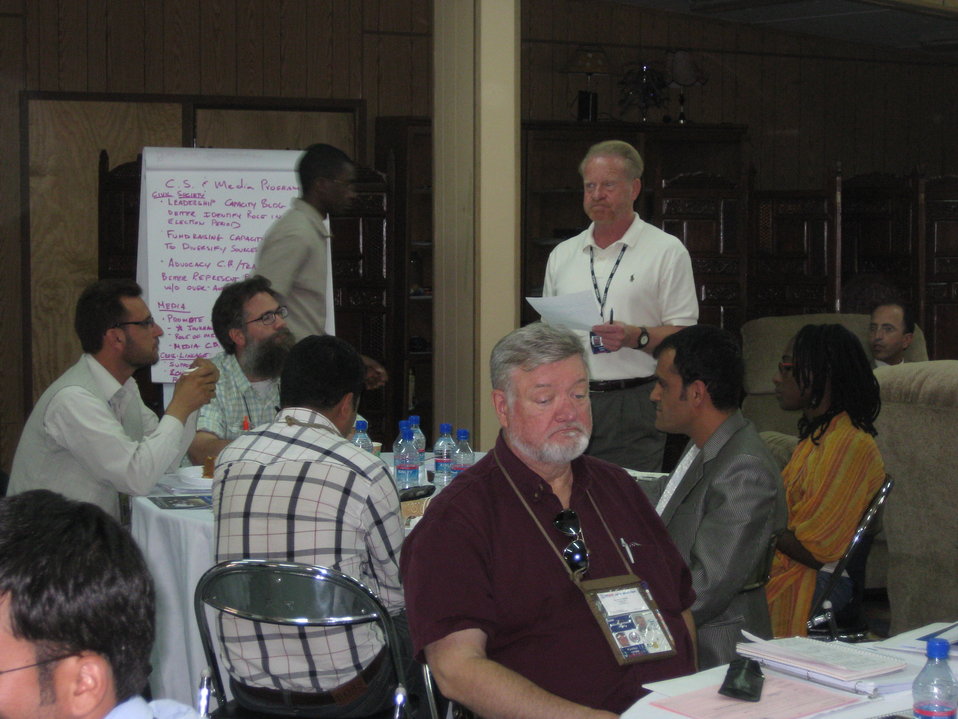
Afghan Youth Voices 047